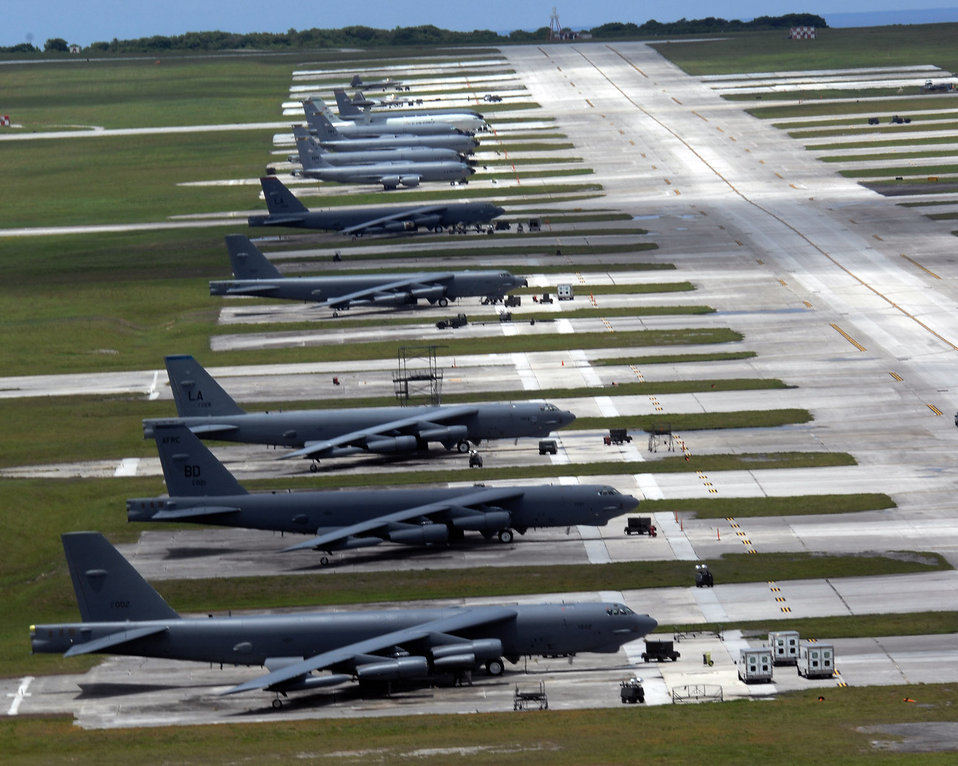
B-52s roar over Guam during bomber surge

Air Force fighters, bombers, tankers and air control aircraft occupy the flightline at Andersen Air Force Base, Guam. The aircraft, deployed from several Air Force bases, are here to promote regional security and stability in the region.